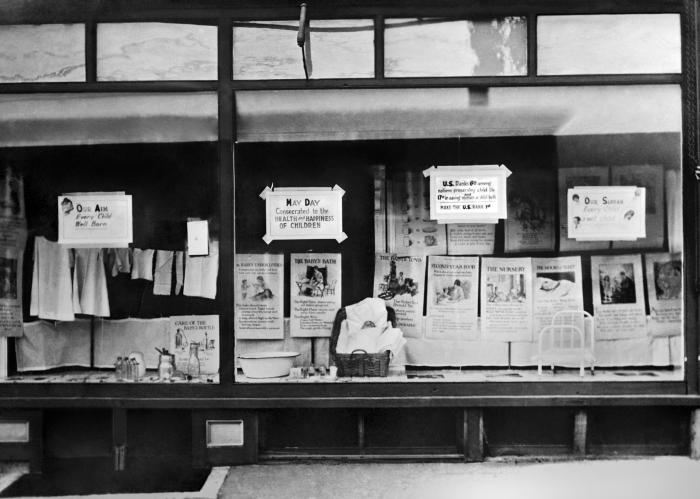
This historic image depicted a storefront that was displaying public service announcements, and other publications regarding the topic of child health. The photographic setting was listed as New Hampshire, and was one of a historical collection of such images devoted to observances of 'Child Health Day' in the United States.